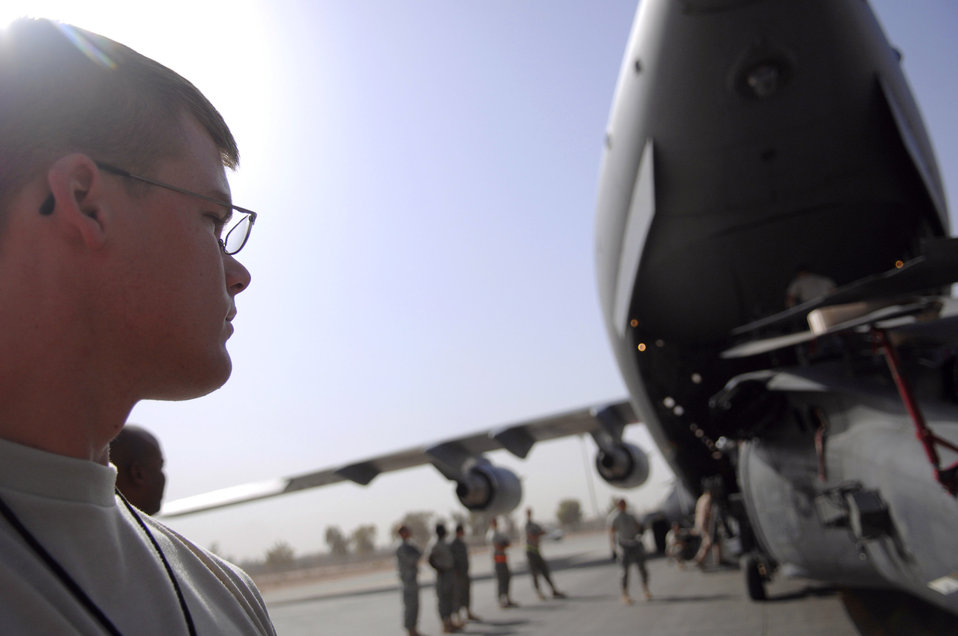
How to put a square peg in a round hole

Airman 1st Class John Rhoades stands by as an HH-60 Pave Hawk is loaded onto a C-17 Globemaster III July 12 at Joint Base Balad, Iraq. Several Airmen position themselves around the helicopter to ensure it doesn't make contact and cause damage. The helicopter is being rotated back to Moody Air Force Base, Ga., for overhaul maintenance. Airman Rhoades is a 64th Expeditionary Helicopter Maintenance Unit avionics specialist deployed from Davis-Monthan Air Force Base, Ariz.